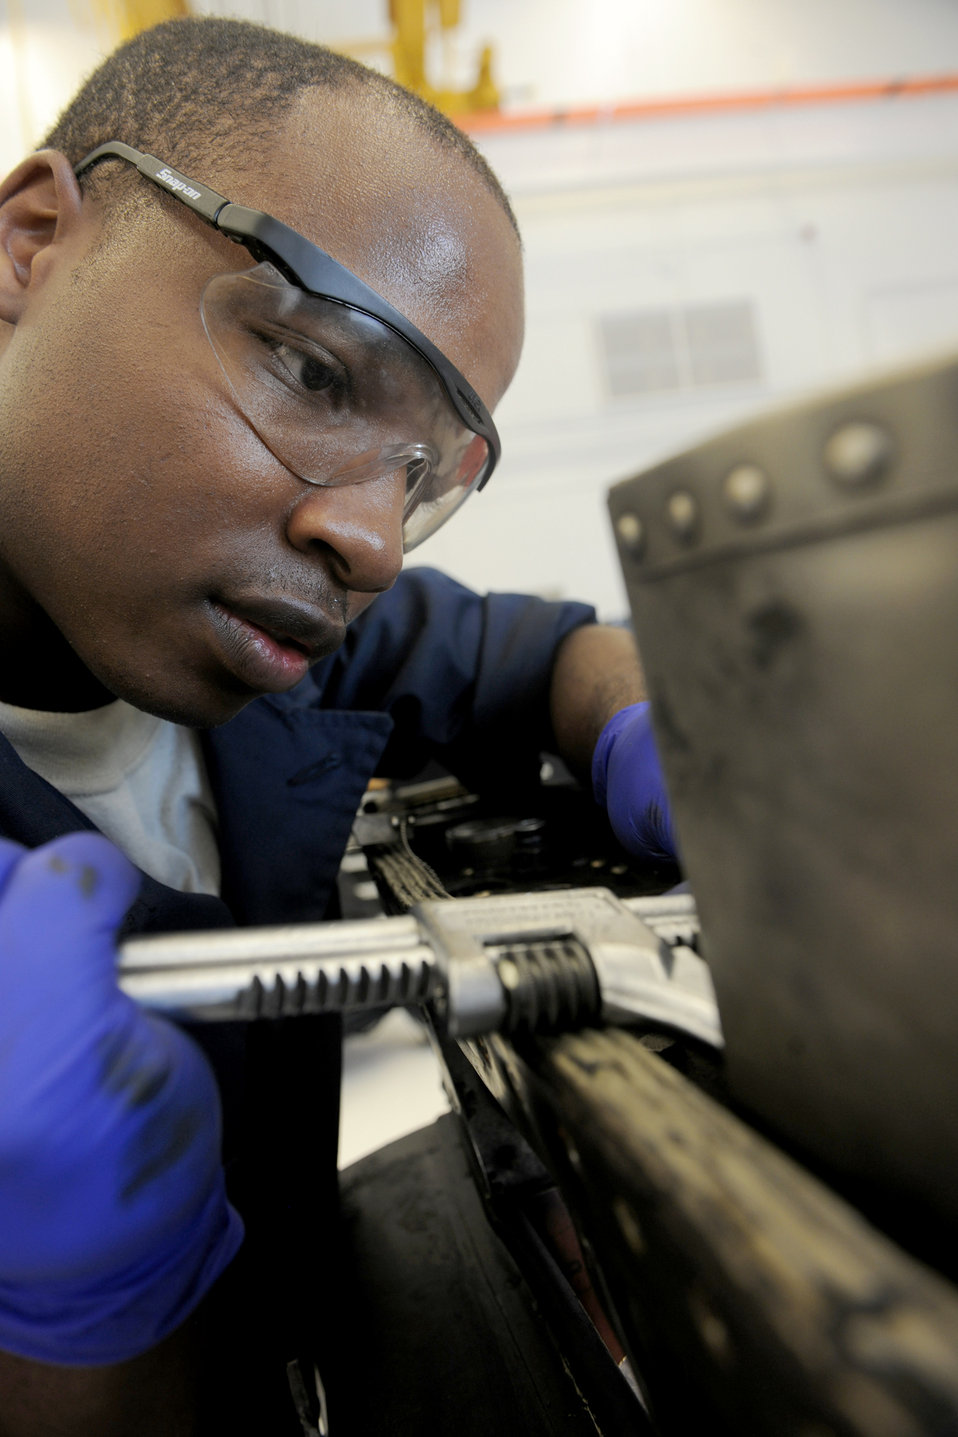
Engine mechanics cross train

Airman 1st Class Tavaris Brown uses a set of pliers to remove safety wires from an A-10C Thunderbolt II pylon tower during maintenance on a TF-34 aircraft engine July 22, 2010, at Moody Air Force Base, Ga. Once the integration is completed, each aerospace propulsion technician from the base will be able to maintain the engines of the A-10C, HC-130 P/N King and HH-60G Pave Hawk aircraft. Airman Brown is a 23rd Component Maintenance Squadron aerospace propulsion apprentice.